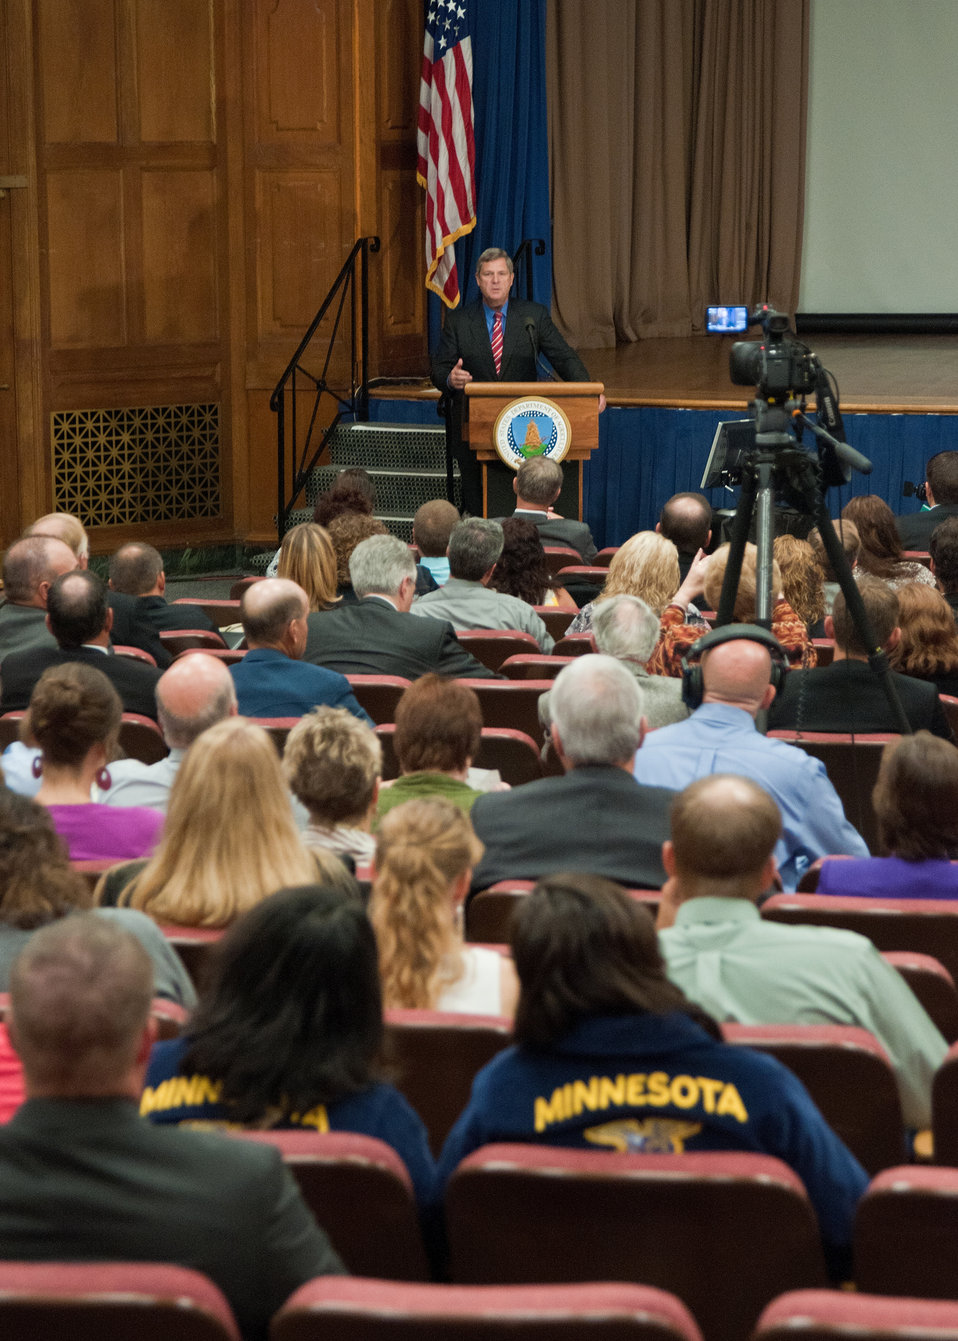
Agriculture Secretary Tom Vilsack spoke to the National Farmer’s Union on the economy of American agriculture during their annual Fall Legislative Fly-In at the U.S. Department of Agriculture in Washington, D. C. on Monday, Sept. 12, 2011.